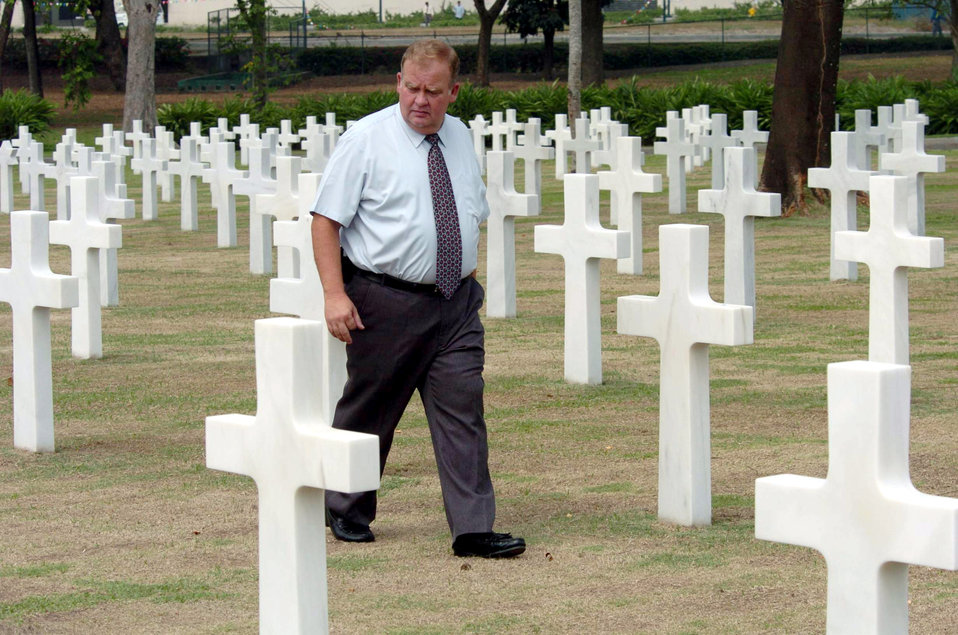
Living among fallen heroes

MANILA, Philippines -- Superintendent Dan Neese makes his daily rounds at the Manila American Cemetery and Memorial. The cemetery is the final resting place for 17,206 Americans from World War II. A Wall of Missing is inscribed with 36,284 names.